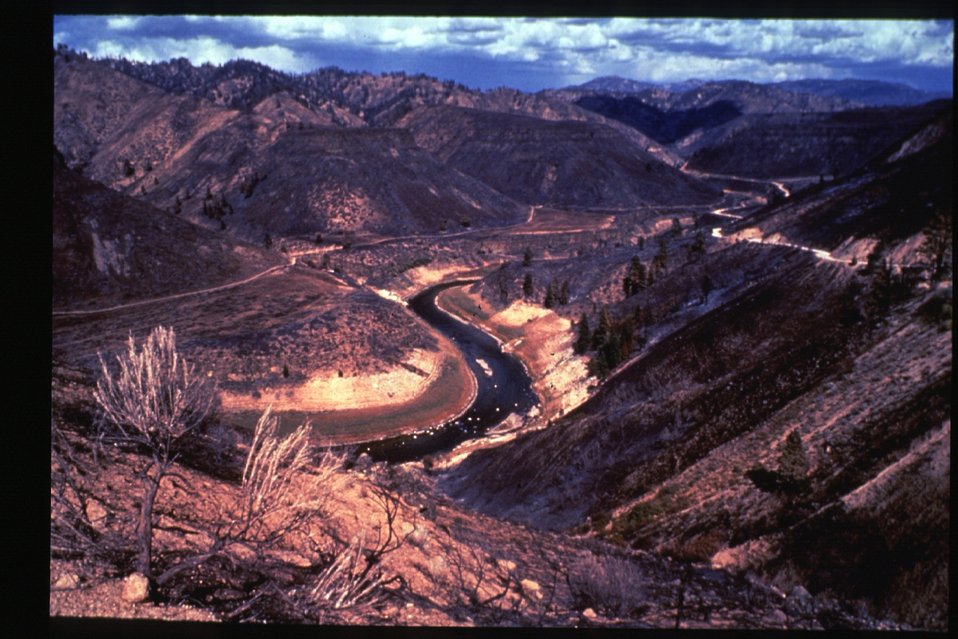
Boise Foothills Fire Danskin Mountains and South Fork of Boise River Four River Field Office LSRD Lower Snake River District